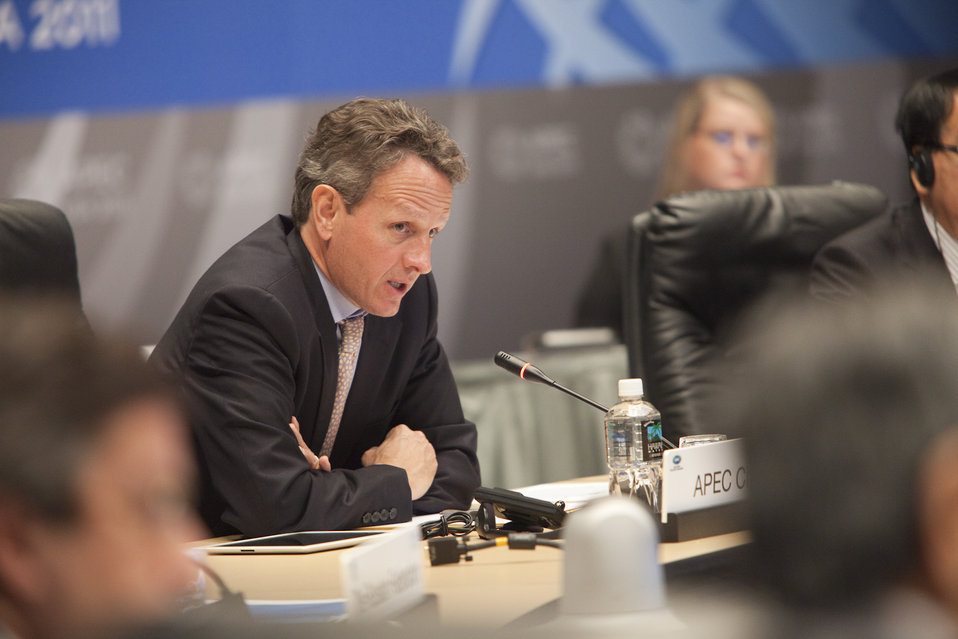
APEC Meeting of Finance Ministers

In the morning and afternoon, Treasury Secretary Tim Geithner chaired a series of APEC working sessions.